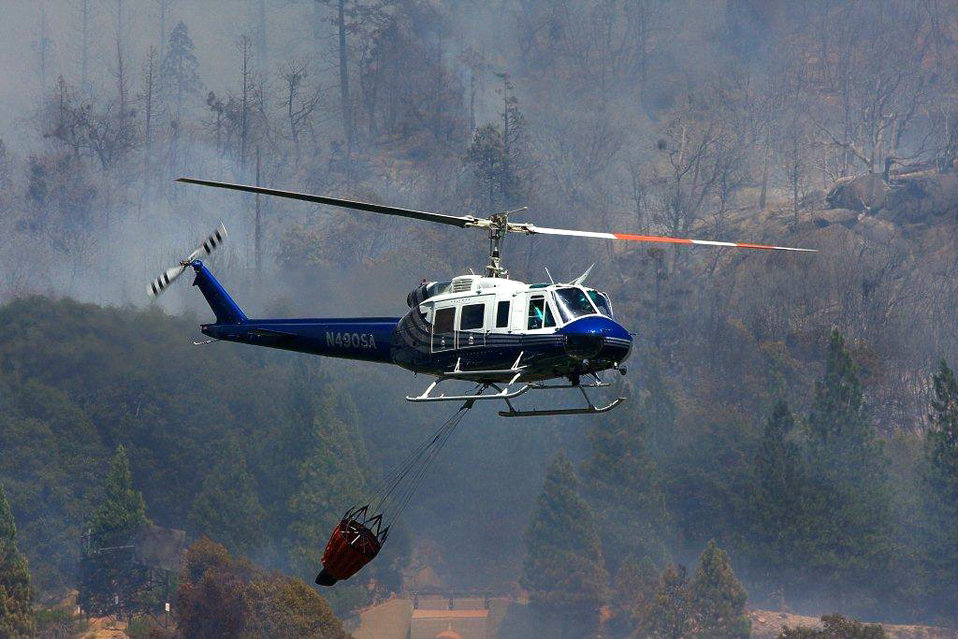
A medium helicopter drops is water on the Power Fire in California. The Power Fire in the Stanislaus National Forest near Beardsley Reservoir in California began on Aug. 5, 2013 is under investigation. The fire has consumed 881 acres and is 32% contained.